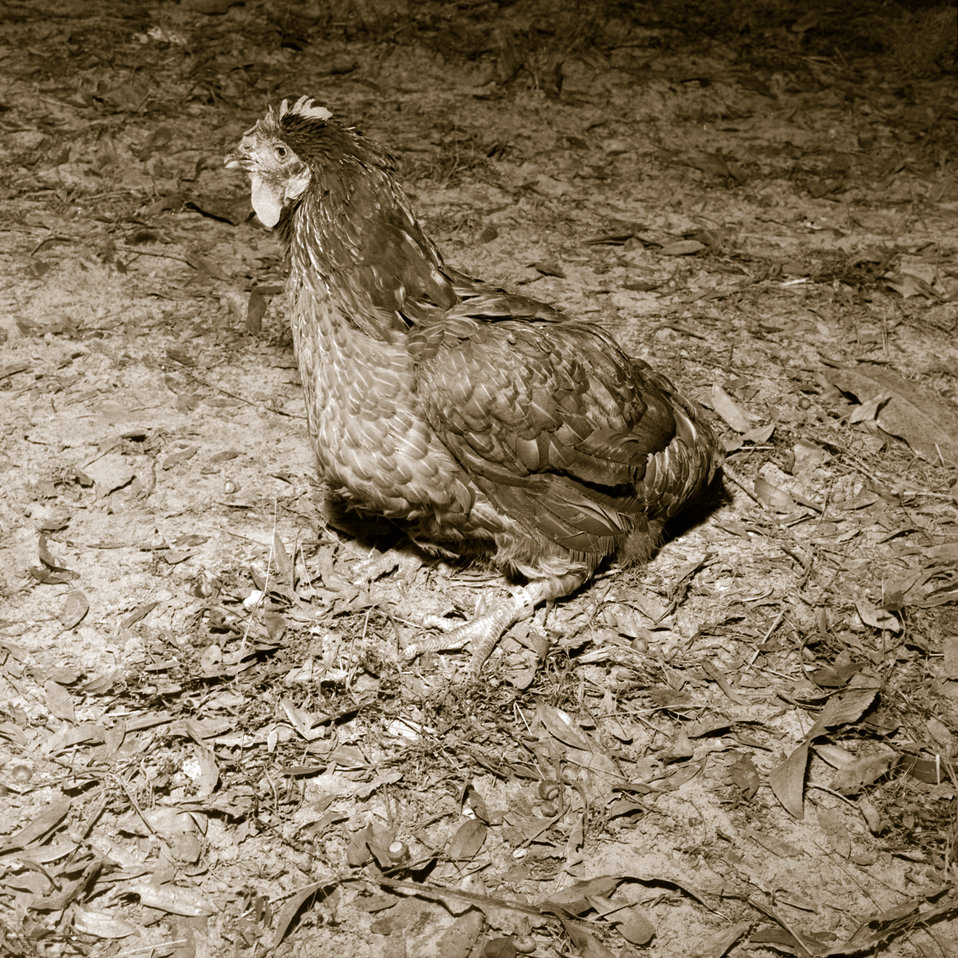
This chicken was displaying paralytic symptoms, which had been the result of having ingested an insecticidal compound to which it had been exposed.